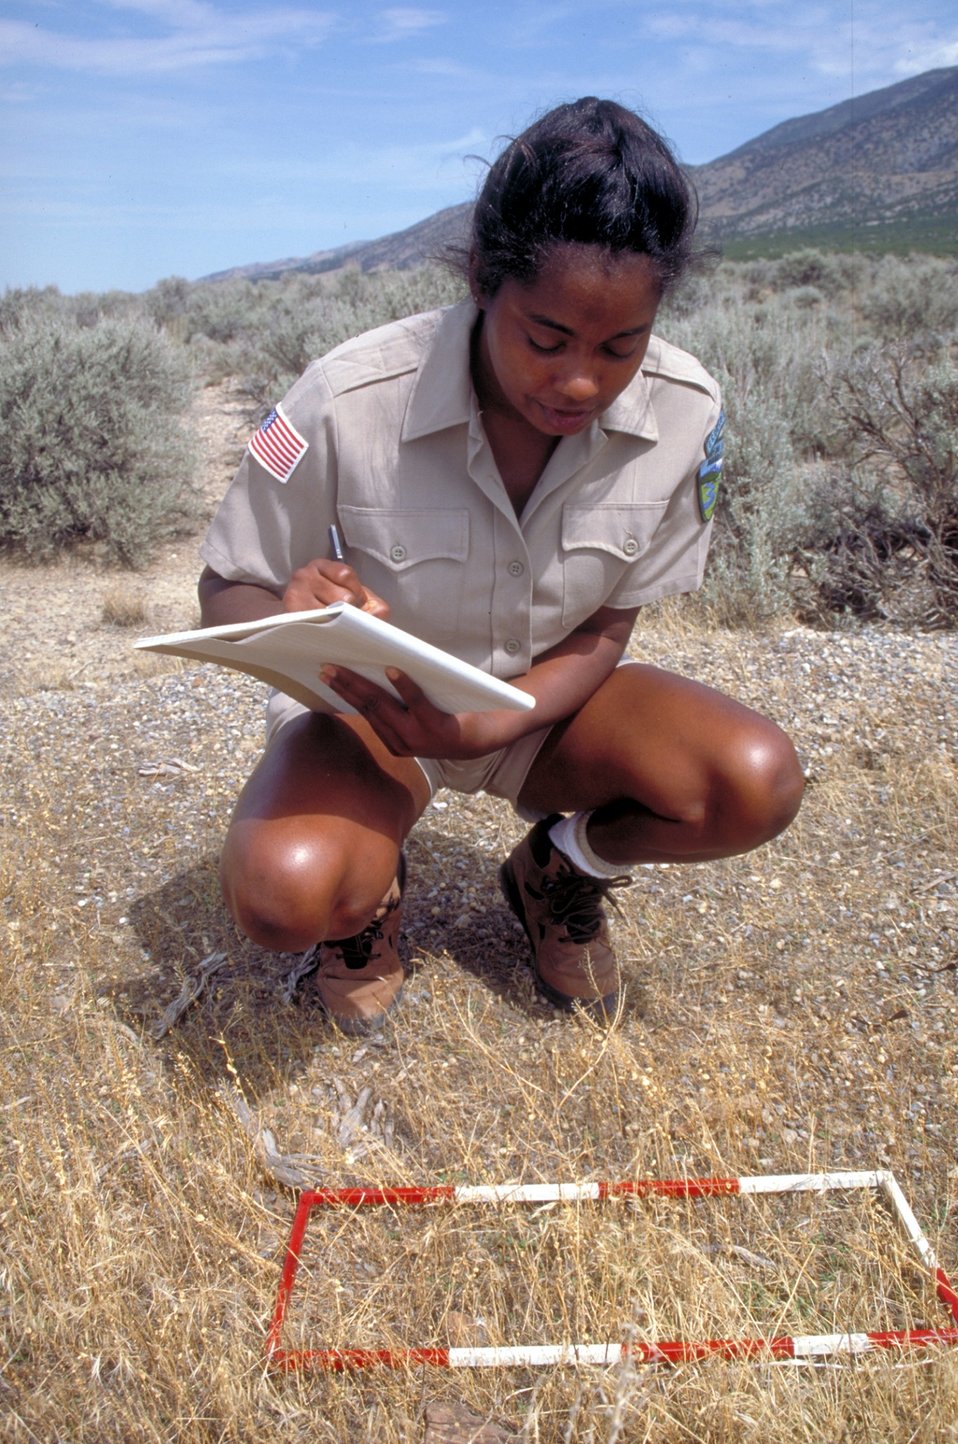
Range study in the West Desert of Utah.